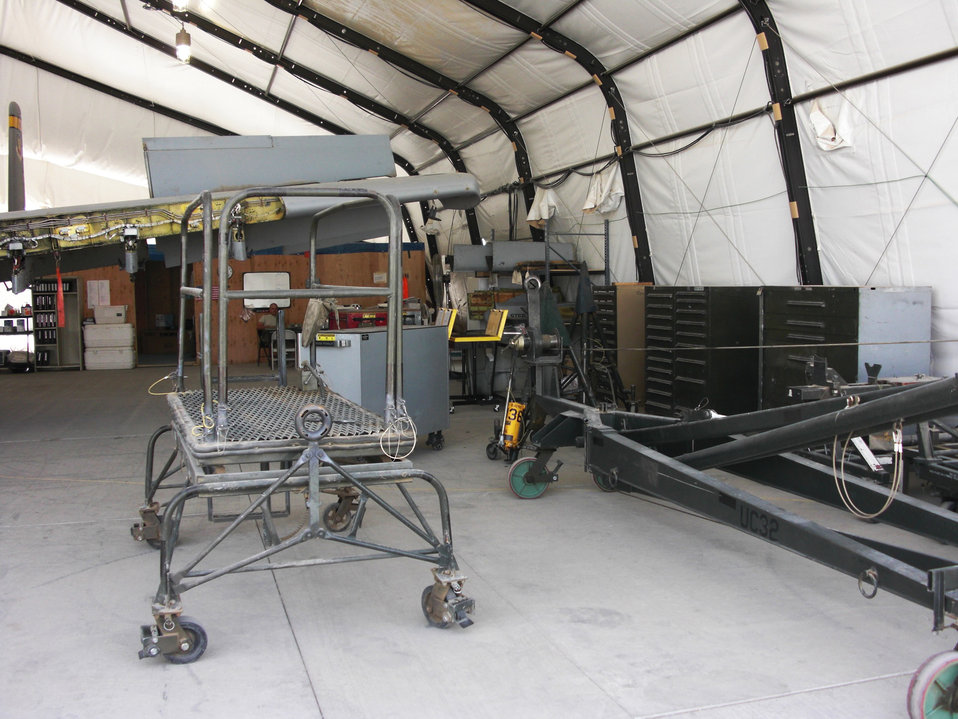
Kandahar Airmen use AFSO 21 at war

The inside of an A-10 Thunderbolt II phase inspection shelter before Airmen applied Air Force Smart Operations for the 21st century Sept. 19, 2009, at Kandahar Airfield, Afghanistan.